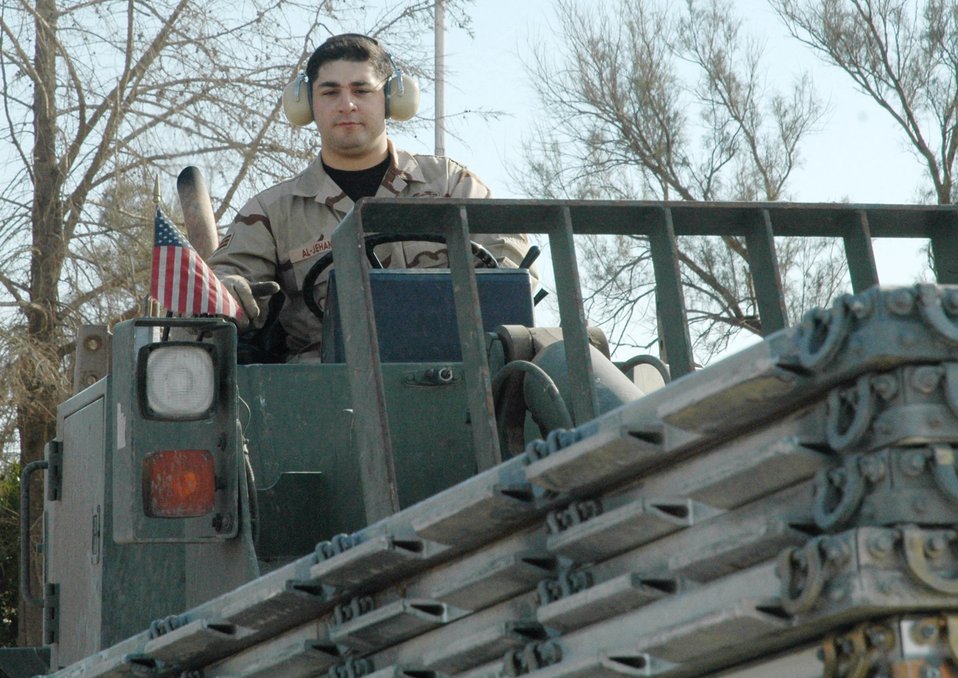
Former Soldier returns to Kirkuk as Airman

Senior Airman Jason Al-Jehani moves pallets in the cargo yard at Kirkuk Regional Air Base, Iraq, in January. Airman Al-Jehani was one of about 1,000 Army paratroopers who were airdropped into northern Iraq March 26, 2003. He is now a reservist assigned to the 39th Aerial Port Squadron at Peterson Air Force Base, Colo. Airman Al-Jehani is an air transportation journeyman deployed to the 506th Expeditionary Logistics Readiness Squadron.